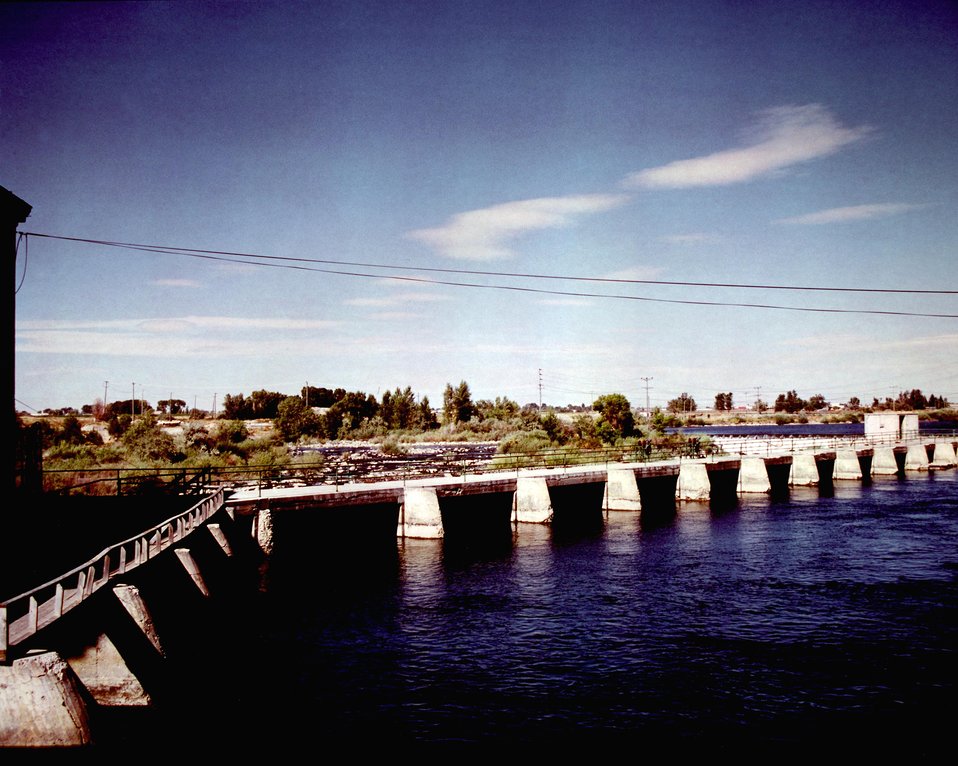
EXISTING DIVERSION DAM AT LOCATION OF LOWER PLANT IN IDAHO FALLS, ID.

THE DEMONSTRATION PROJECT AT IDAHO FALLS CONSISTS OF REDEVELOPING THE CITY'S THREE EXISTING POWER PLANT SITES. THESE THREE SITES, ALONG THE SNAKE RIVER, ARE GOING TO CONTAIN LOW-HEAD HYDROELECTRIC PLANTS. A 7.2 MWE BULB TURBINE-GENERATOR WILL BE INSTALLED ON EACH SITE. ONE SITE WILL ALSO MAINTAIN TWO EXISTING 1.875 MWE UNITS AS STANDBY OR PEAK FLOW UNITS. PRIOR TO THIS PROJECT, BULB TURBINES HAD ONLY BEEN USED FOR HIGH POWER GENERATION. THIS PROJECT IS GOING TO DEMONSTRATE THAT BULB TURBINES CAN BE USED ECONOMICALLY FOR SMALL-SCALE, LOW-HEAD HYDROELECTRIC POWER GENERATION. THE PROJECT IS ALSO GOING TO DEMONSTRATE THAT THIS TECHNOLOGY CAN BE USED IMMEDIATELY, IT DOES NOT NEED EXTENSIVE RESEARCH AND DEVELOPMENT.